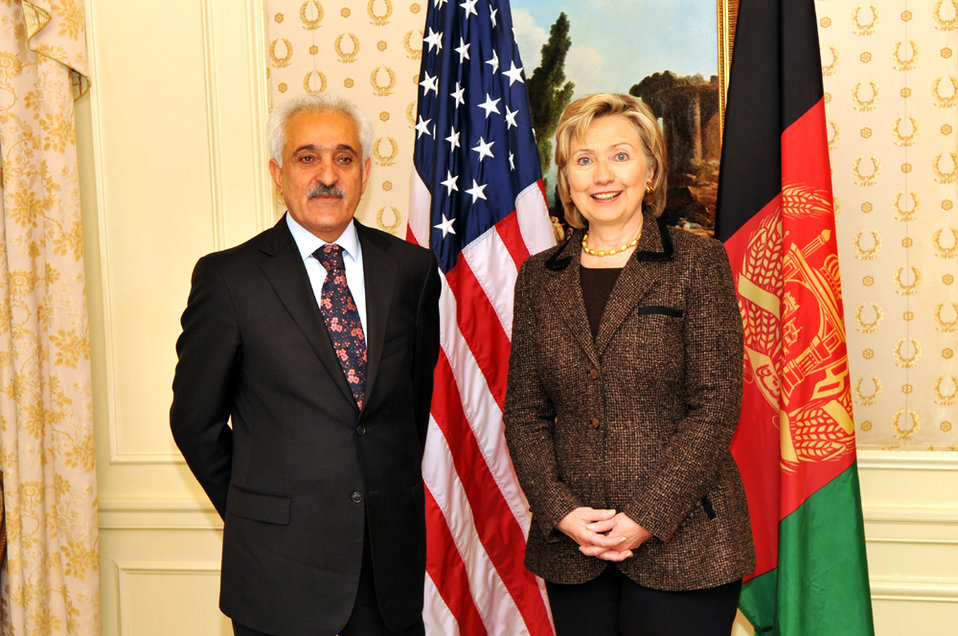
UNGA 2009: Secretary Clinton Meets With Afghan Foreign Minister

U.S. Secretary of State Hillary Rodham Clinton meets with Afghan Foreign Minister Rangin Dadfar Spanta at the Waldorf Astoria hotel in New York City, New York September 28, 2009.